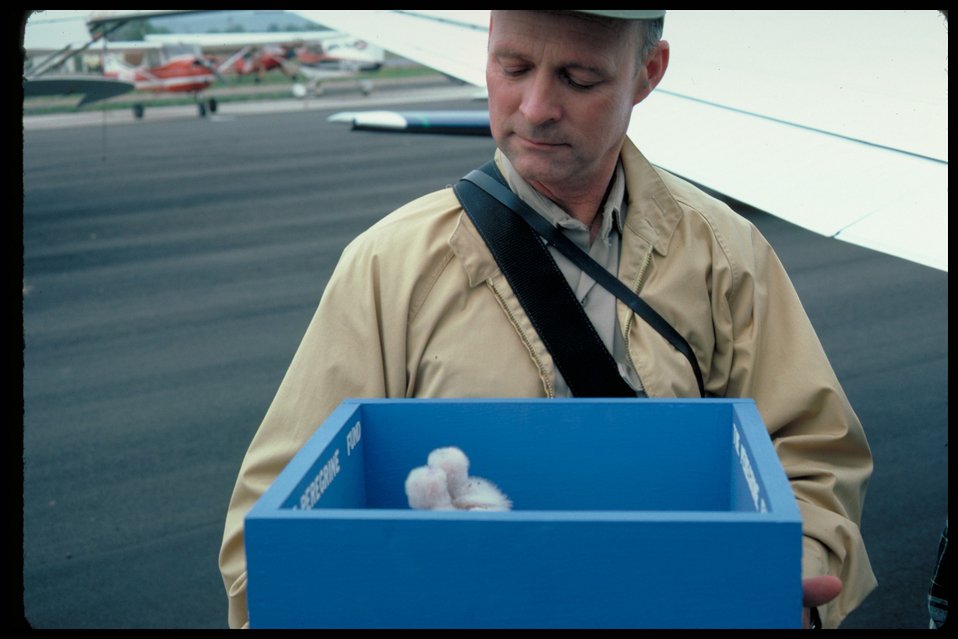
Birds of Prey National Conservation Area BOP Owyhee Field Office LSRD Lower Snake River District